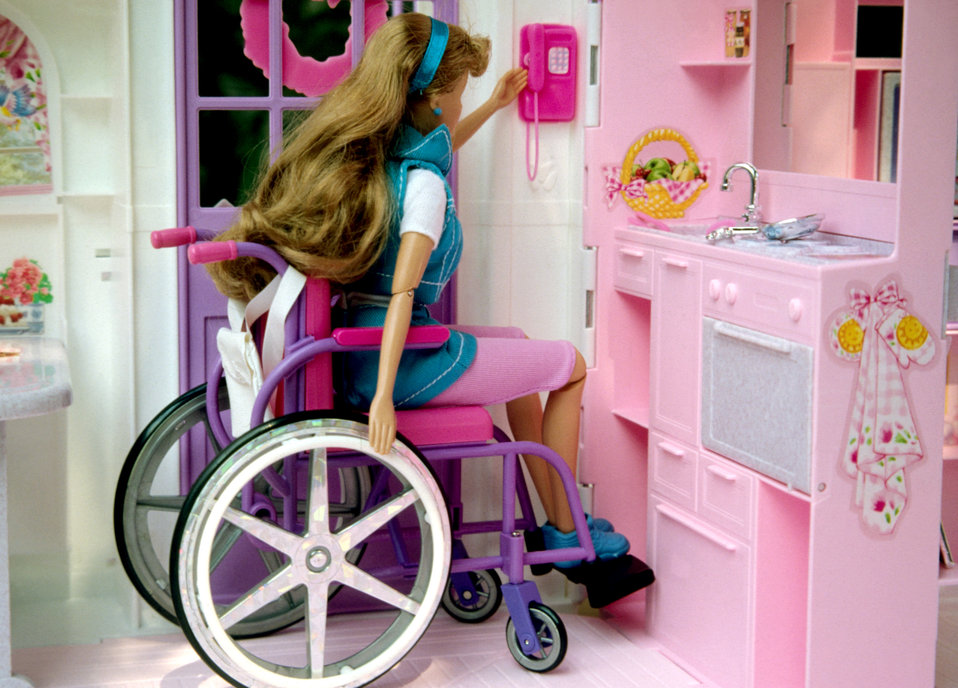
This was one of three images (PHIL# 9135 - 9137) depicting an attempt by a toy manufacturer to produce a toy character, which displayed characteristics that emulated those of a mobility-challenged person who was a wheelchair user. This disabled character was portrayed in the manner that echoed the style of the rest of their toy line. In doing so, the manufacturer tried to, in a sense, mainstream the knowledge of what is faced by the disabled in the real world through play, and therefore, was as educational, as it was entertaining to the childhood demographic group. PHIL image 9137, showed Ron Mace looking through a door in the playhouse. Mr. Mace was a principle of Barrier Free Environments, Inc. (BFE), and a co-founder of the Center for Universal Design (CUD). He developed the concept of universal design in the mid-1980's, and died in 1998.